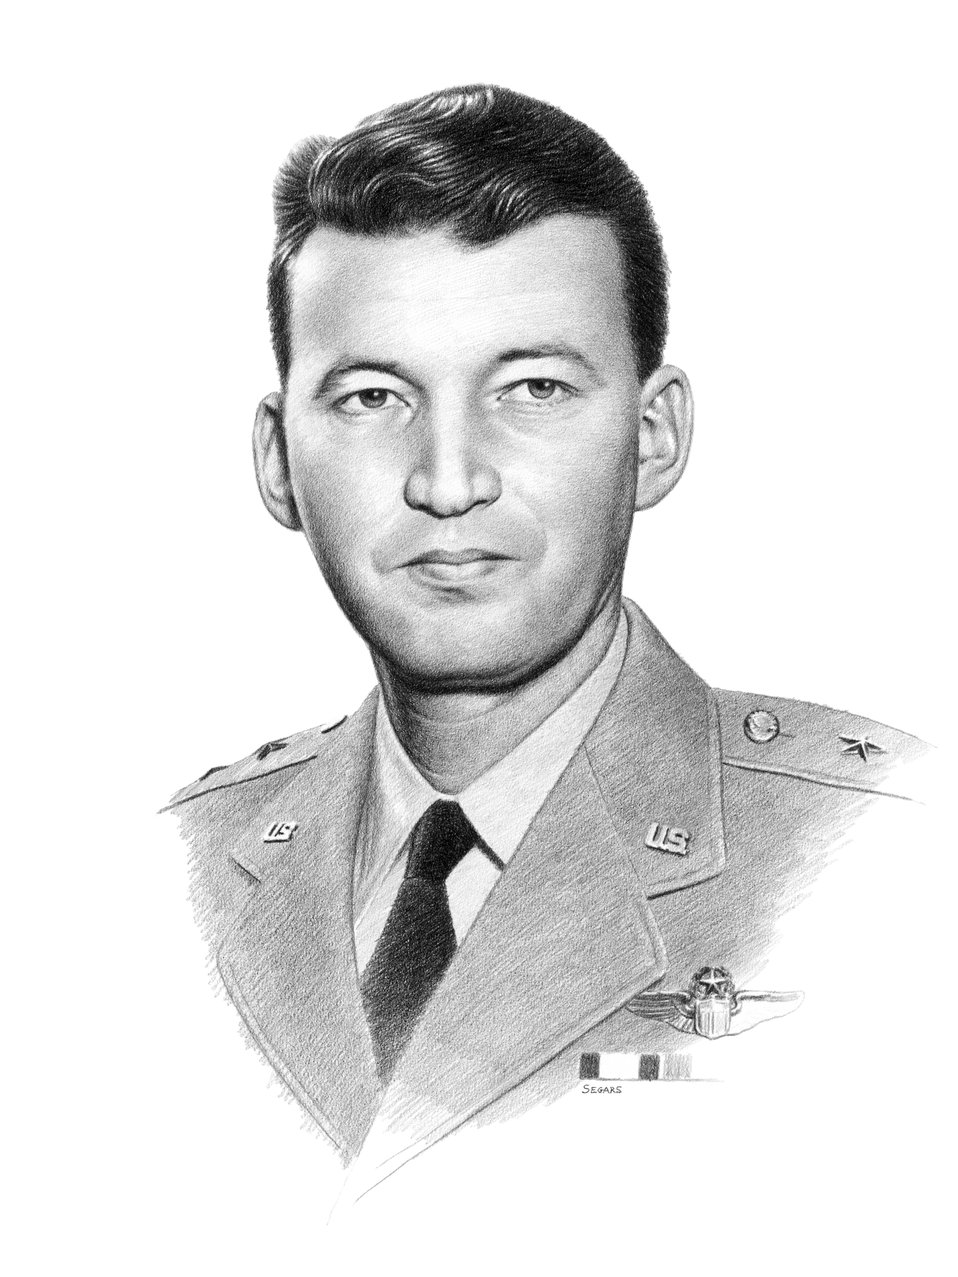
Officials unveil portrait of AF pioneer

The portrait, a pencil drawing by Air Force visual information specialist Thomas Segars will hang permanently as a memorial to General Schriever. Lori Dawson also an Air Force visual information specialist, designed the display in which the portrait hangs.